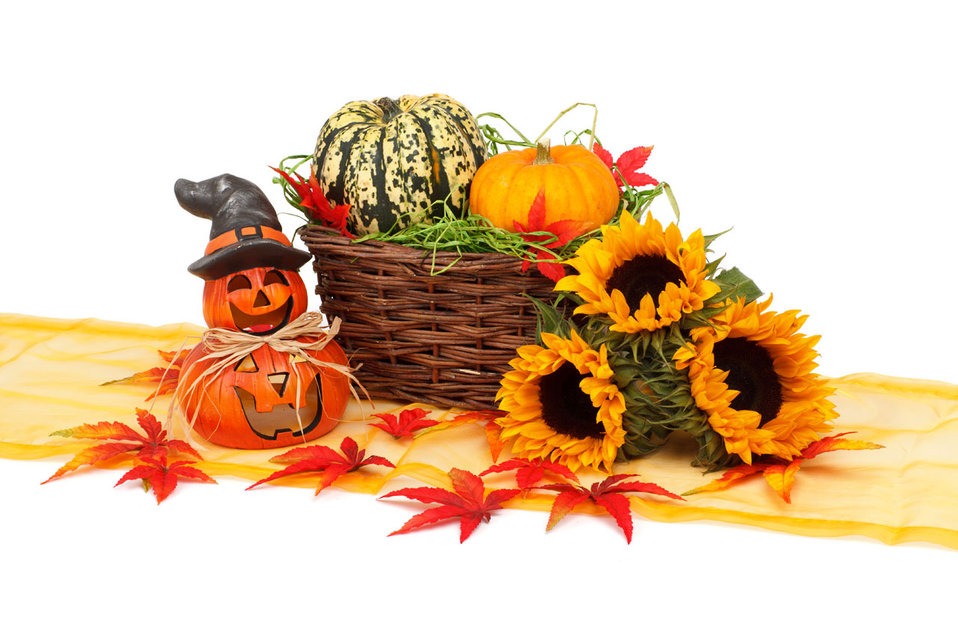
Cute halloween decoration

Happy hallowen pumkin with autumn harvest and sunflowers on white background.